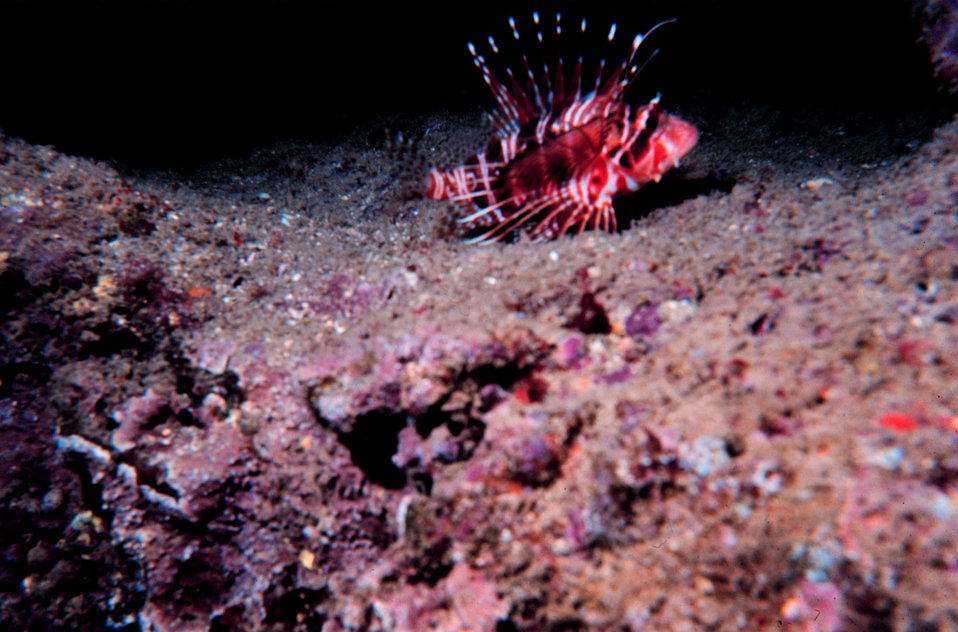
Pterois sphex - Lionfish - Dorsal spines are extremely poisonous. Living in pipe in artificial reef